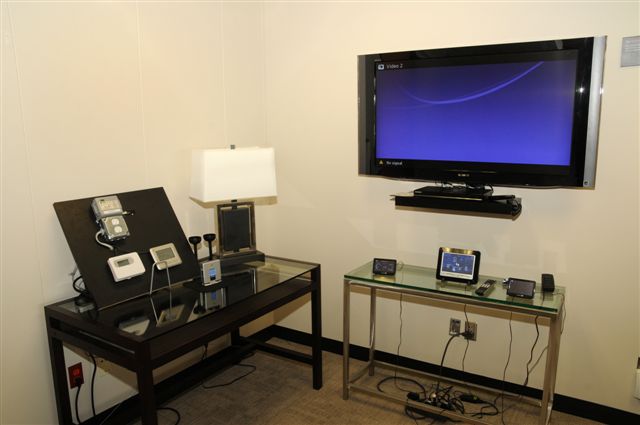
CenterPoint’s in-home monitoring display